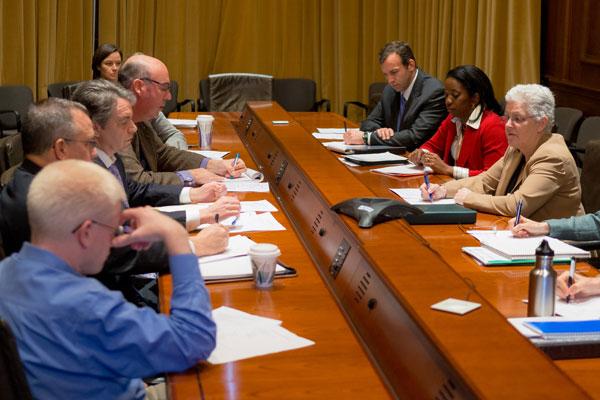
Day in the Life - April 4, 2014

10:44 am - McCarthy leads a meeting with senior EPA officials from the Office of Air and Radiation to discuss progress on the proposal to reduce carbon pollution from existing power plants, a key pillar in the President’s Climate Action Plan. (5/12)